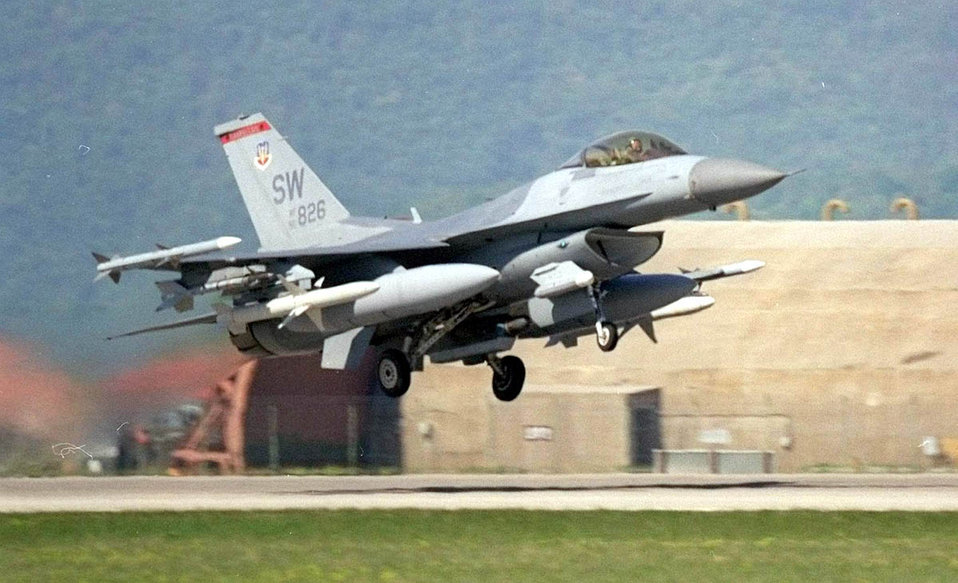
Deployed Falcon

AVIANO AIR BASE, Italy -- An F-16 Fighting Falcon from Shaw Air Force Base, S.C., takes off from here. The F-16 is one of more than 170 aircraft deployed to Italy in support of NATO's Operation Allied Force.